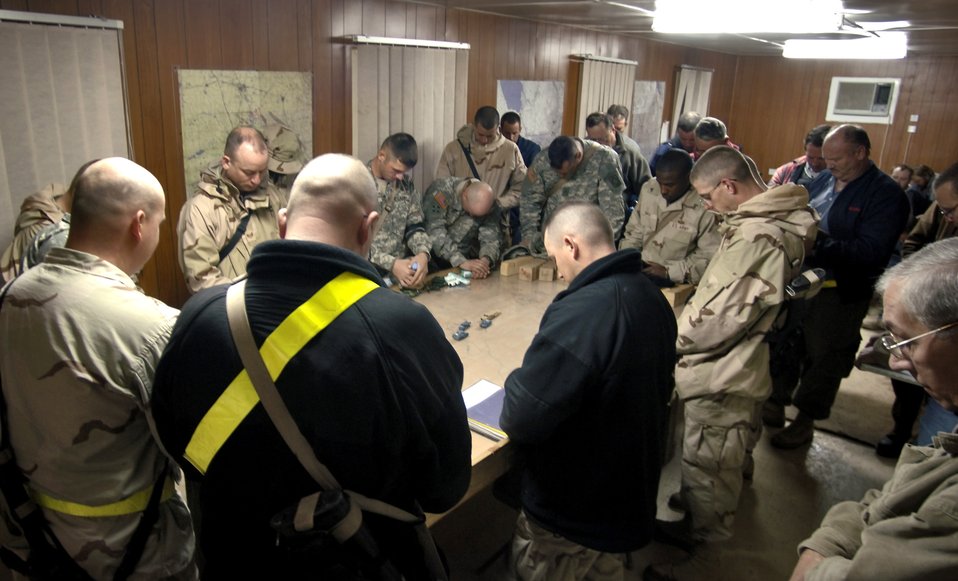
Convoy duty

BALAD AIR BASE, Iraq (AFPN) -- Airmen, Soldiers and civilians pray before heading out on a convoy mission. The Airmen are with the 732nd Expeditionary Logistics Readiness Squadron.